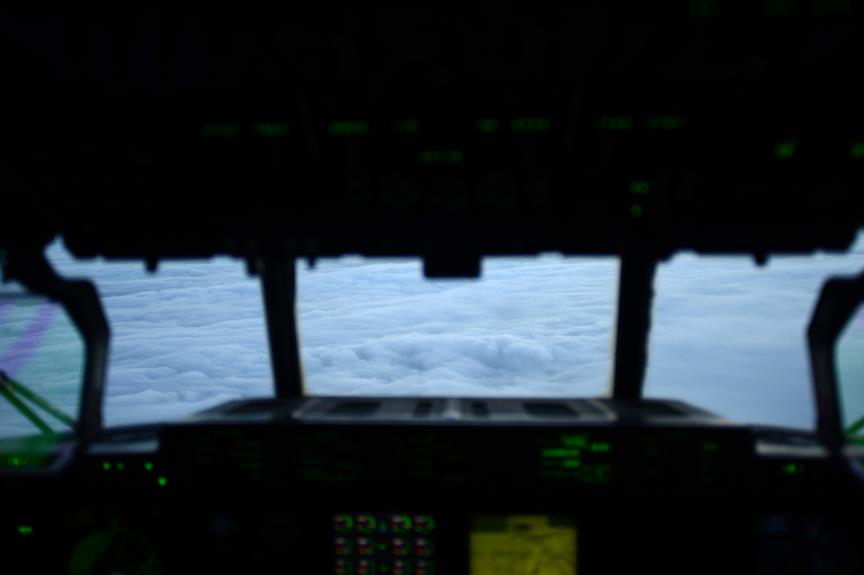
Hurricane Sandy

A WC-130J Hercules, from the 53rd Weather Reconnaissance Squadron, flies into Hurricane Sandy Oct. 29, 2012 somewhere over the Eastern coastline of the U.S. The 53rd WRS conducted weather reconnaissance missions in preparation for Hurricane Sandy making landfall along the Eastern coastline of the United States.